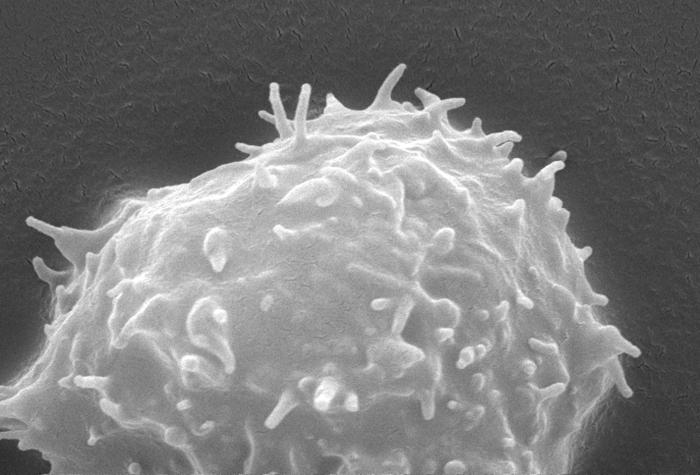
This scanning electron micrograph (SEM) revealed some of the ultrastructural features seen on the surface of an Acanthamoeba polyphaga protozoan. Note the numerous projecting pseudopodia, from the Latin pseudo = false, and podia = feet, which extend from the organism's surface. These enable the amoeba to move about, and grasp objects in its environment.